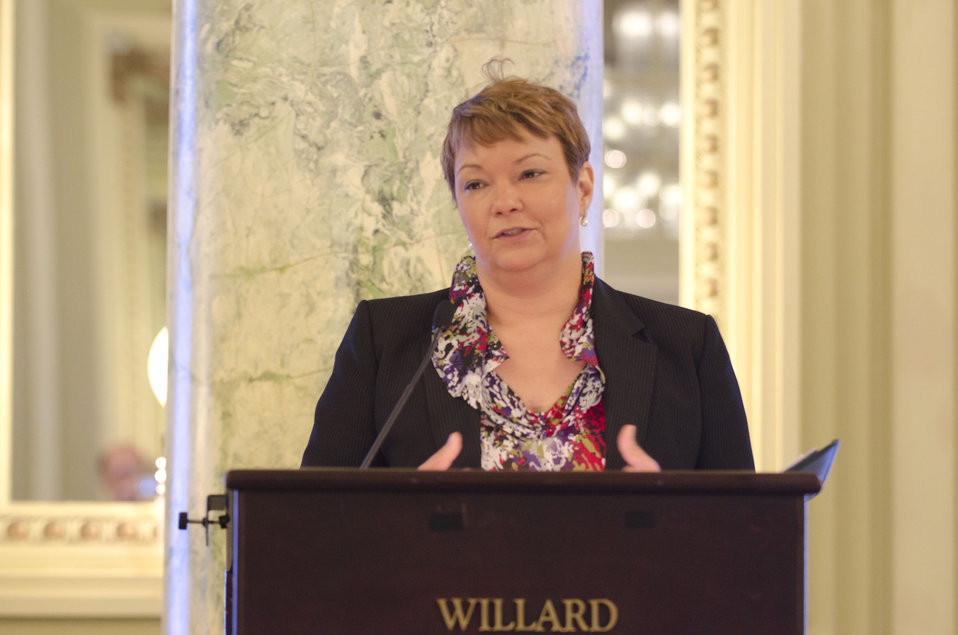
2011-05-05 NRCCCPrayerBreakfast 038

US EPA Administrator Lisa P Jackson addresses the guests after accepting the Steward of God's Creation Award from the National Religious Coalition on Creation Care.